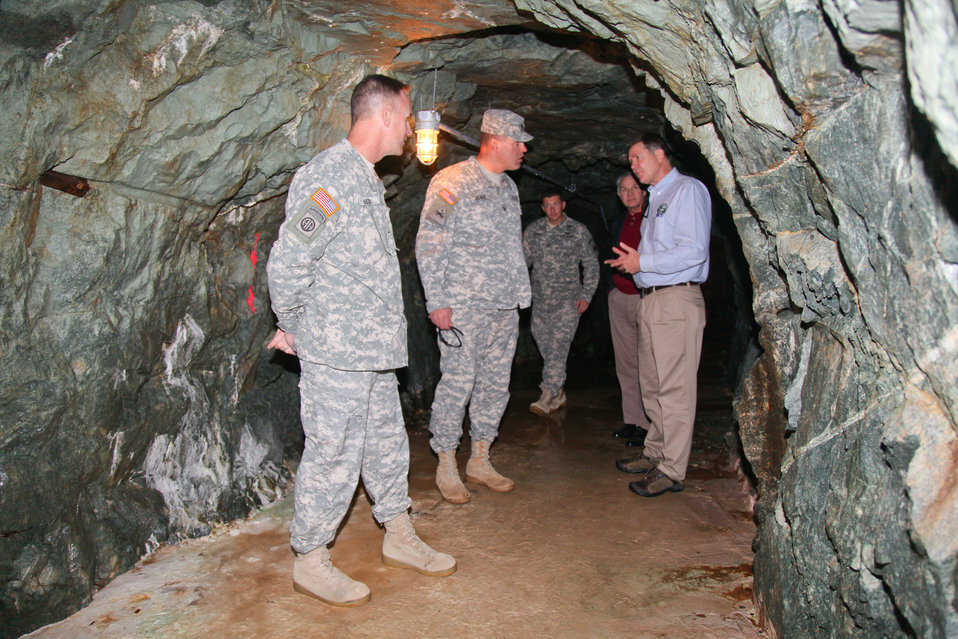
Corps takes a tour of the Yuba County Water Agency

Inside the base of New Bullards Bar Dam outside Marysville, Calif., general manager Curt Aikens (right) of the Yuba County Water Agency led a tour of the New Bullards Bar Reservoir’s facilities Dec. 9, 2011. Aikens and his agency hosted the tour for U.S. Army Corps of Engineers South Pacific Division commander Col. Mike Wehr (left), Sacramento District commander Col. Bill Leady (second from left), Paul Robershotte (second from right), special adviser for the South Pacific Division, and Capt. Chris Herold, Aide de Camp for Col. Wehr. The tour gave the Corps officials an opportunity to see and hear first-hand the water agency’s existing and planned flood-risk reduction projects. The tour also included a visit to the agency’s water supply facilities, fishery enhancements, recreation and hydro-electric generation at Daguerre Point, Englebright and Bullards Bar Dams.